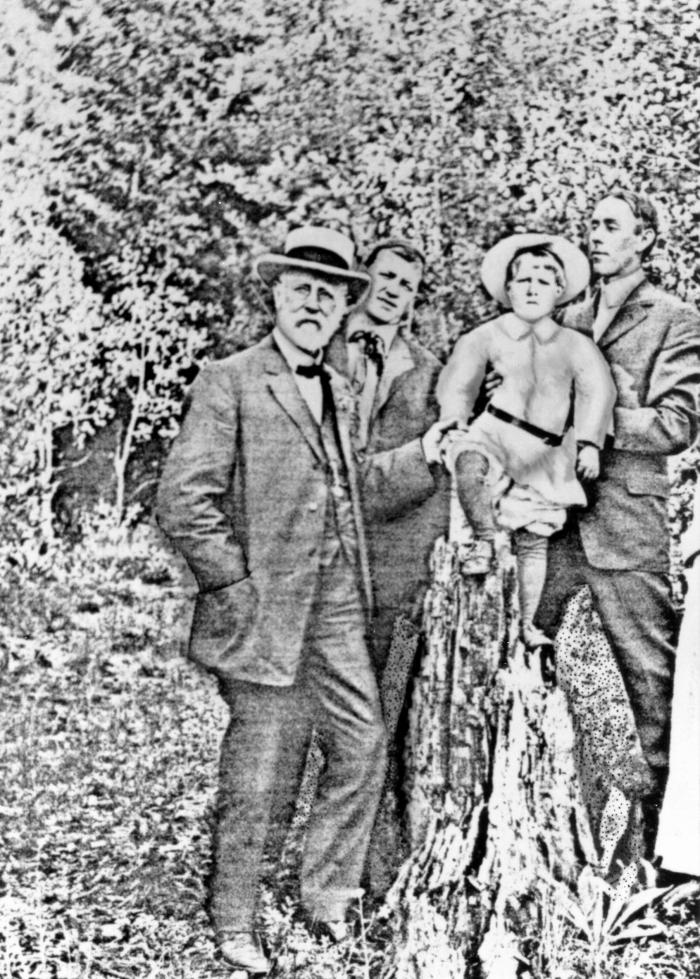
In 1909, Dr. G.V. Black (Lt) visited Dr. F. McKay (Rt) in Colorado Springs to investigate the Colorado brown stain phenomenon.